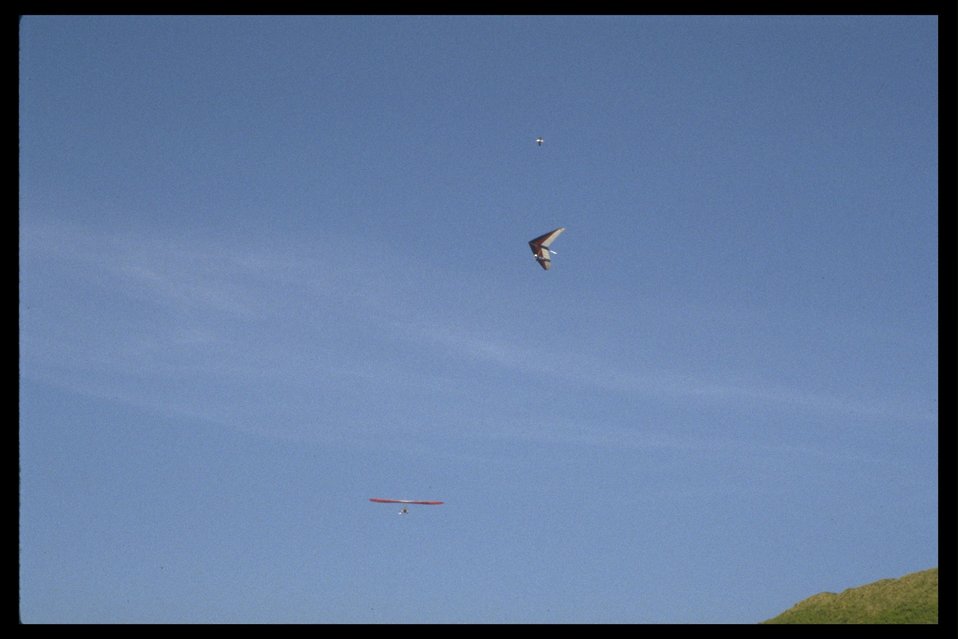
Hang glider near Yaquina Head Lighthouse.